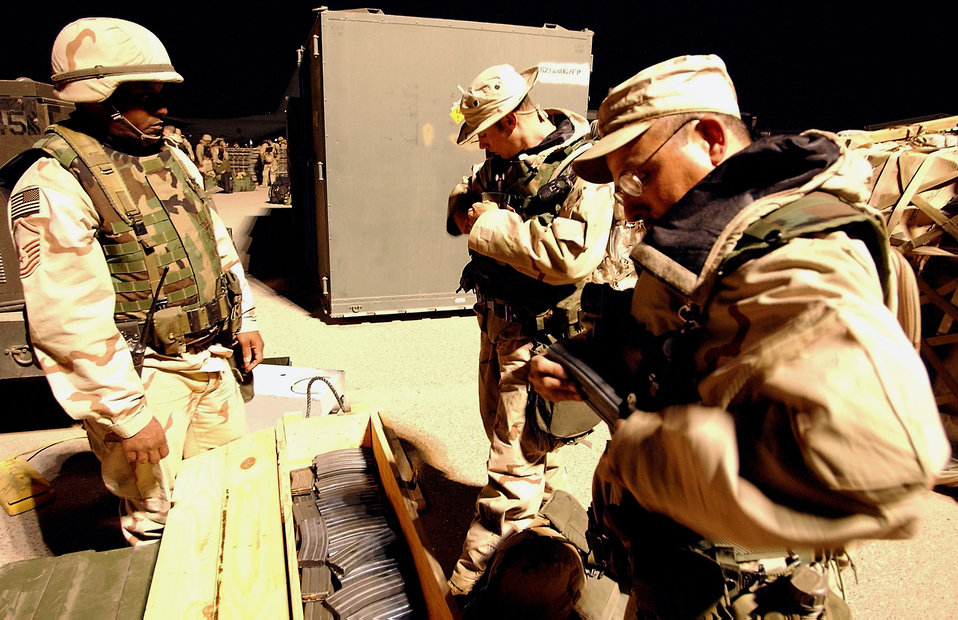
TACLE

OPERATION IRAQI FREEDOM -- Members of the 821st Tanker Airlift Control Element wait to board a C-130 Hercules aircraft while deploying to an undisclosed location March 27, 2003. The 821st TALCE is forward deploying in support of Operation Iraqi Freedom.